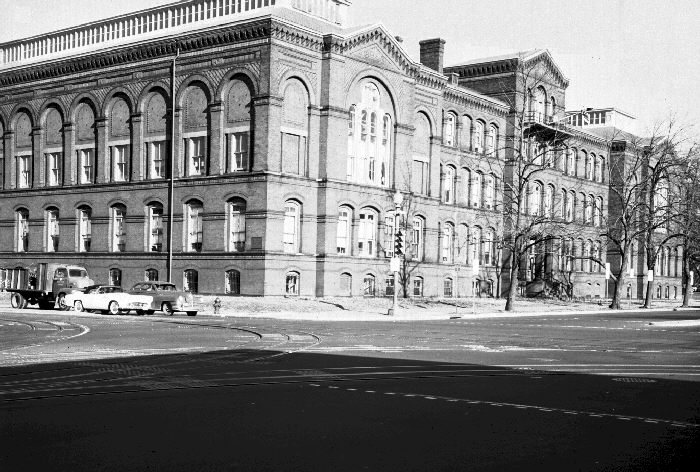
Old location of National Library of Medicine, Washington, D.C.